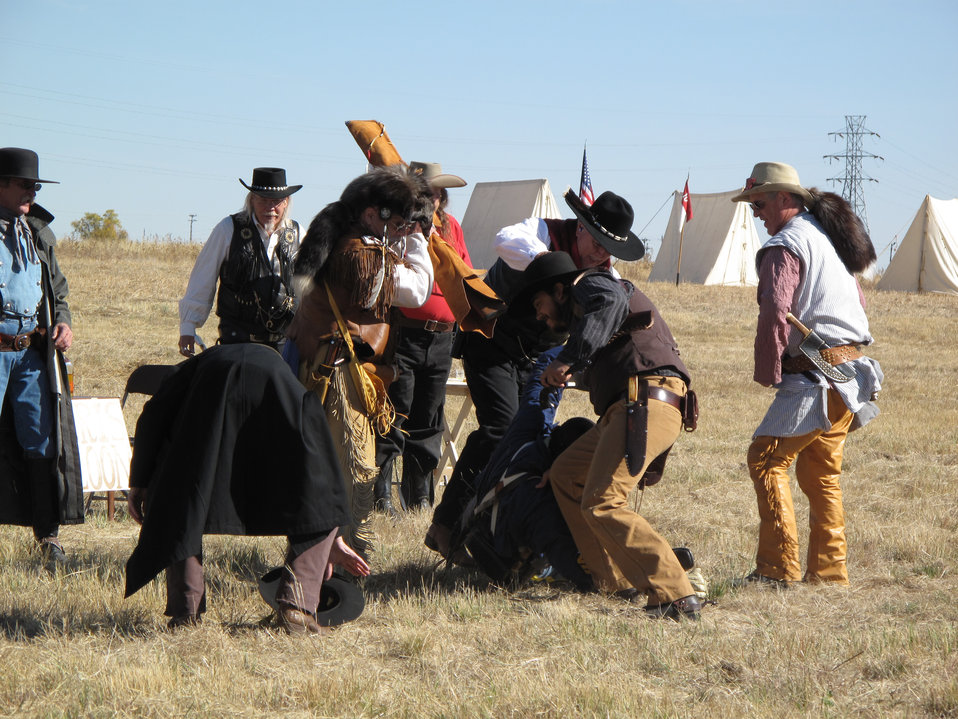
Refuge Round-up 2010

Saloon reenactment.